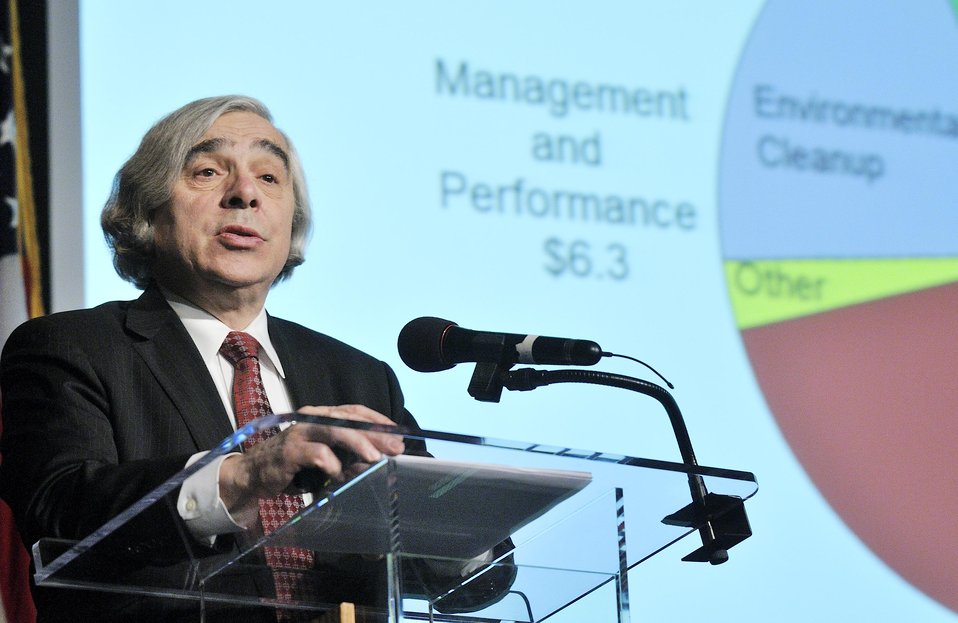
205

SECRETARY E. MONIZ - 2014 DOE BUDGET ROLL OUT ON MARCH 4, 2014